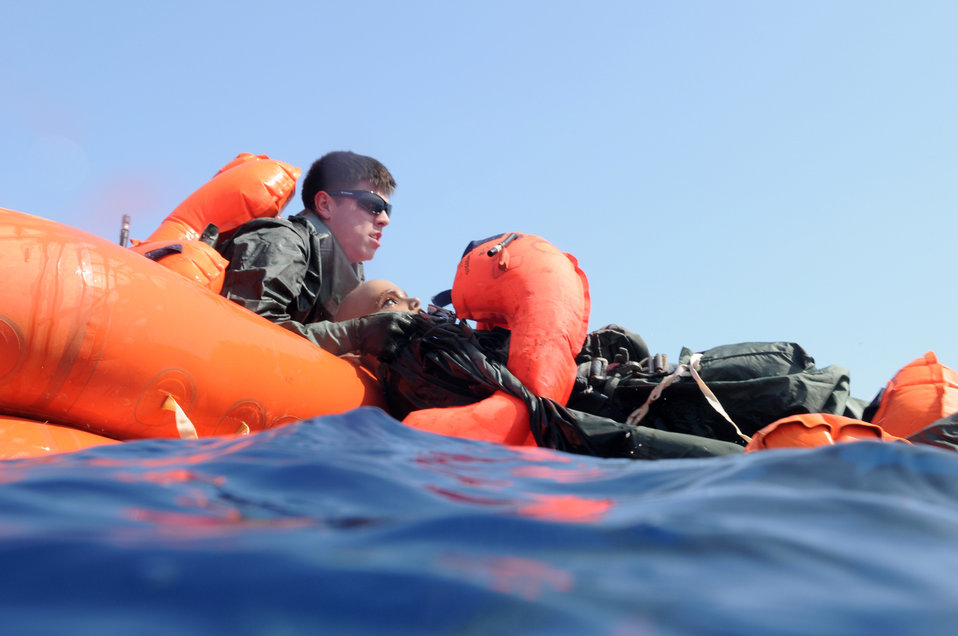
Perfect save

Senior Airman James Sharp pulls a